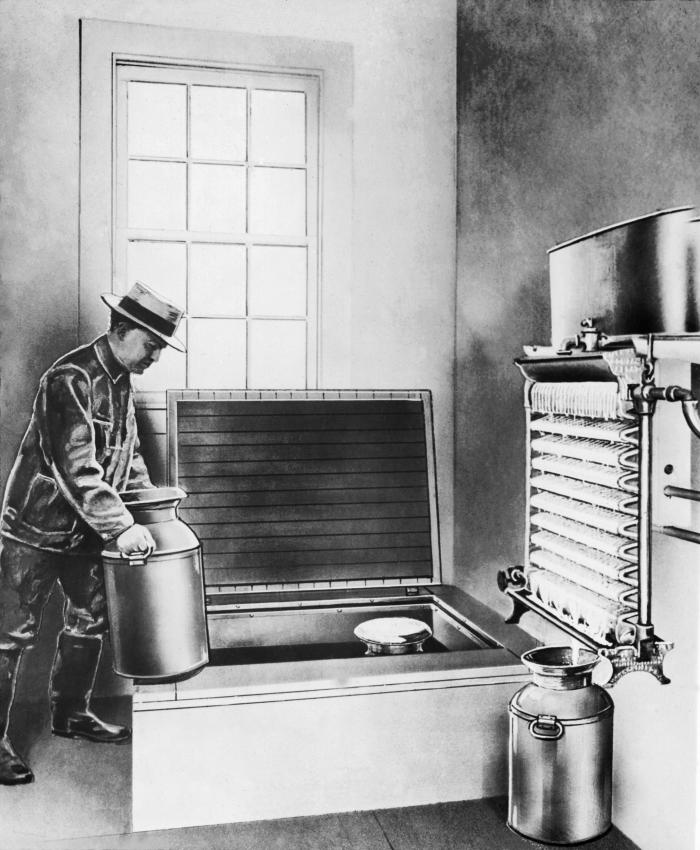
This heavily photo-retouched historic 1929 image depicted a dairy worker as he was placing cans of cooled milk into a cold storage tank. Heat-pasteurized milk was cooled by passing it through cooling pipes before it was placed in the storage cans.